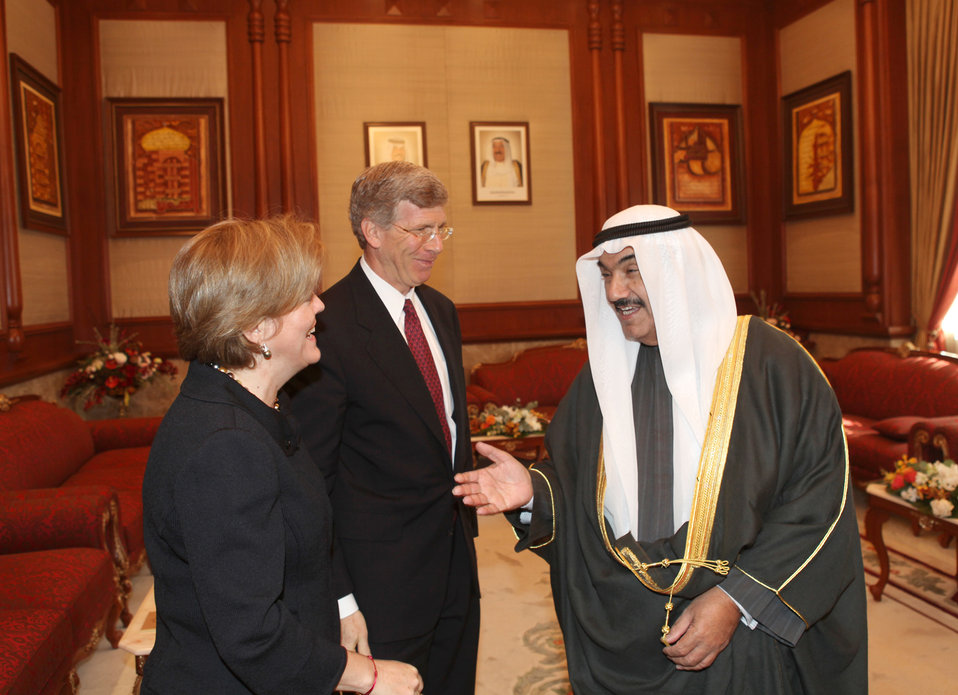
Deputy Secretary Poneman meets with Prime Minister Sheikh Nasser Al-Mohammad Al-Ahmad Al-Jaber Al-Sabah of Kuwait.